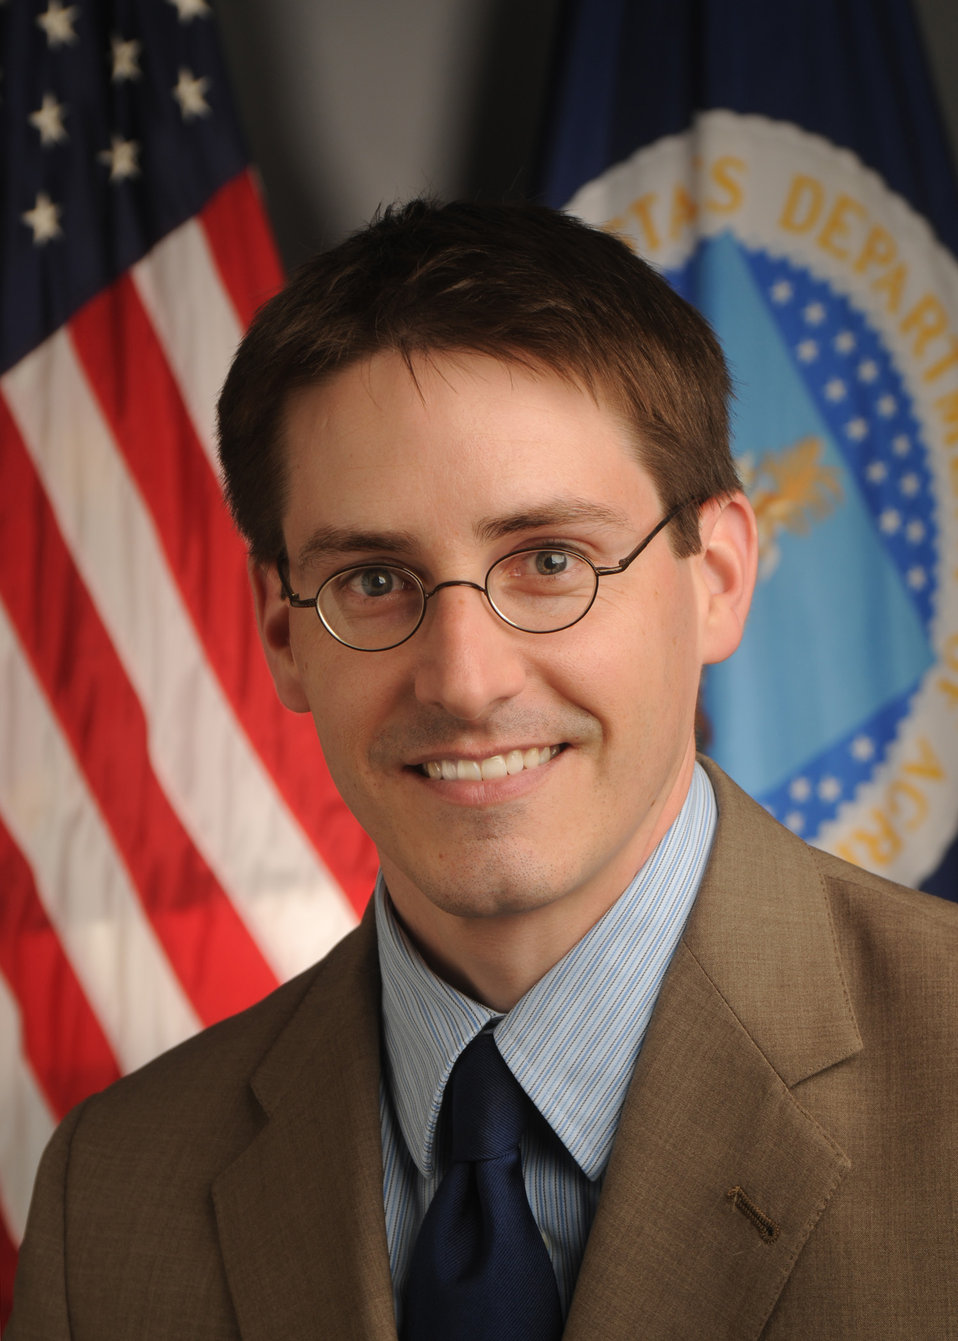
09di1084-005 Deputy Under Secretary for Marketing and Regulatory Programs John Ferrell

Portrait, Deputy Under Secretary for Marketing and Regulatory Programs John Ferrell.